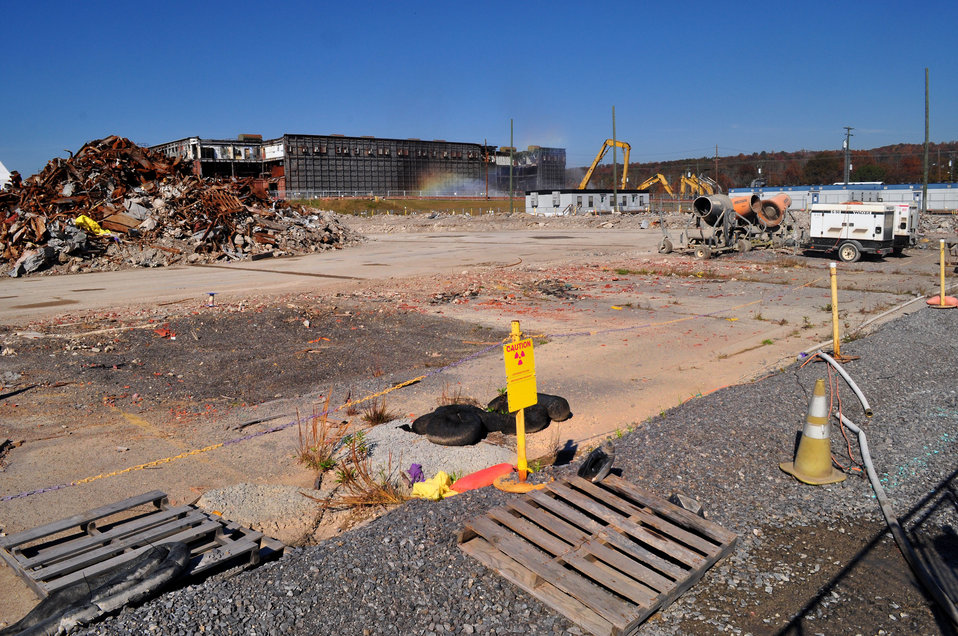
K-25 Beginning of North Tower Demolition

12-160-0422 DOE photo Lynn Freeny 10-24-2012 Oak Ridge Tennessee